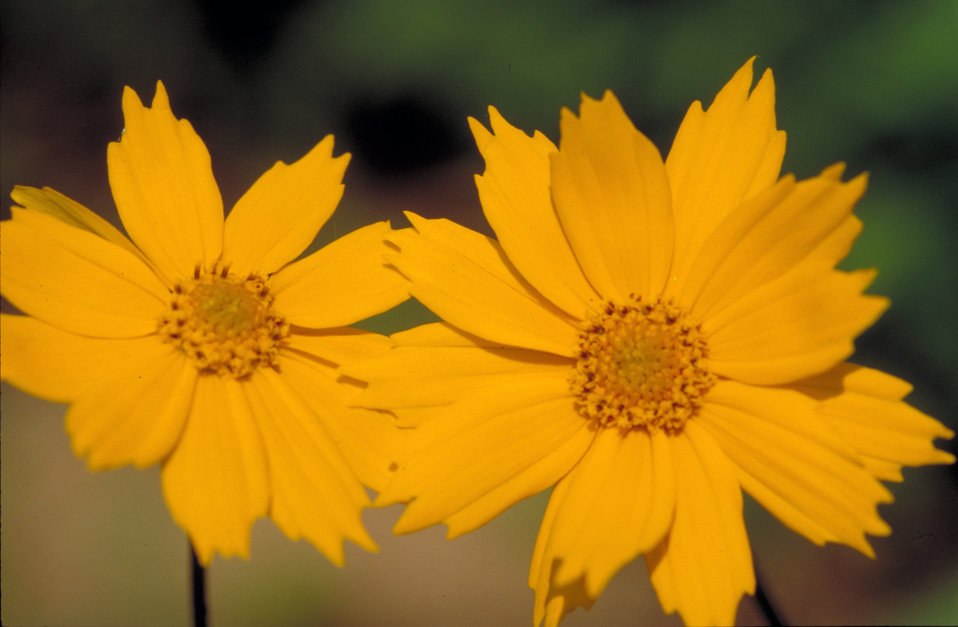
Eared Coreopsis

Close up of two yellow flowers with brownish yellow centers.